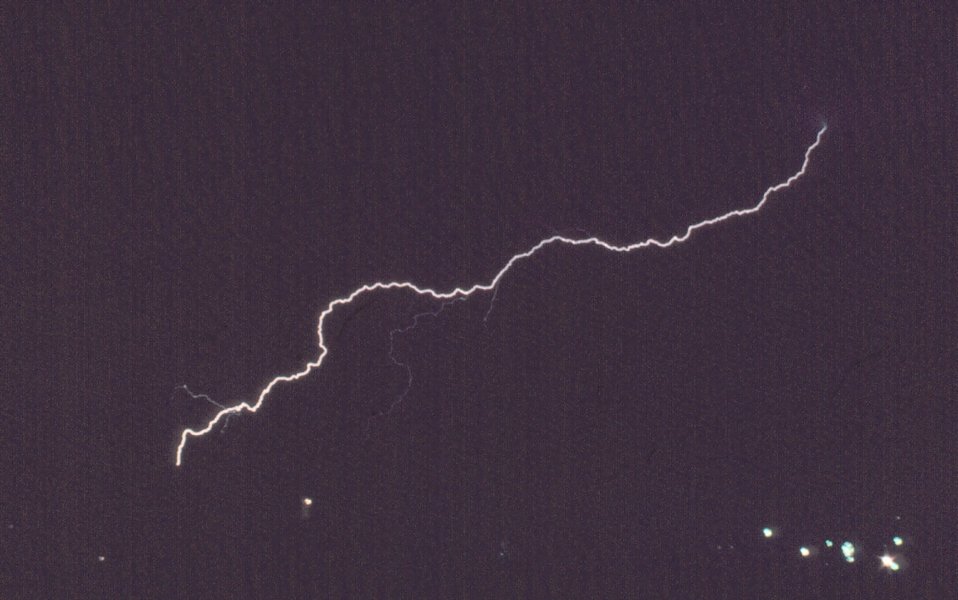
Lightning near Boulder